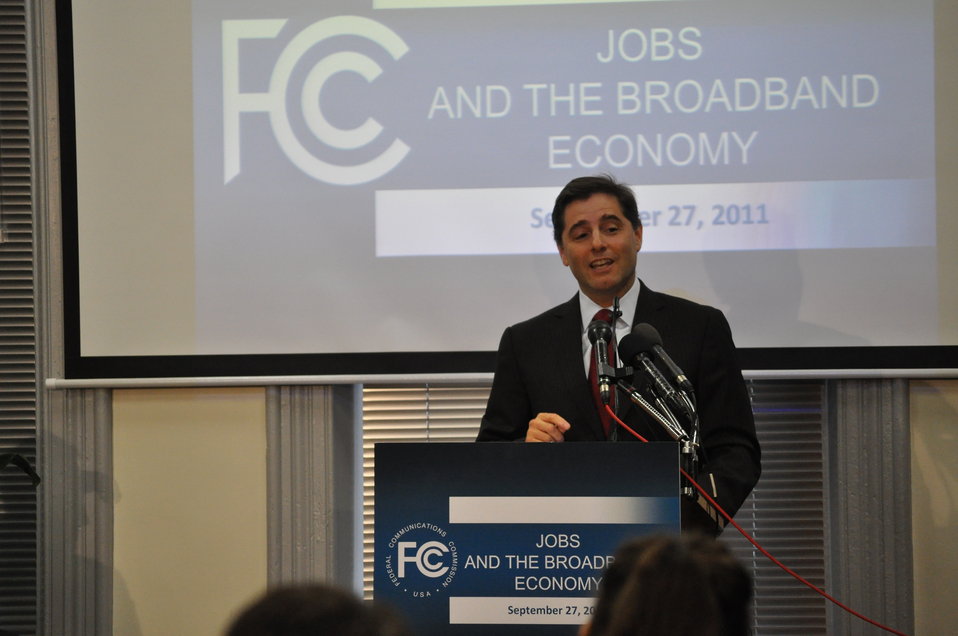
Jobs and the Broadband Economy

FCC Chairman Genachowski